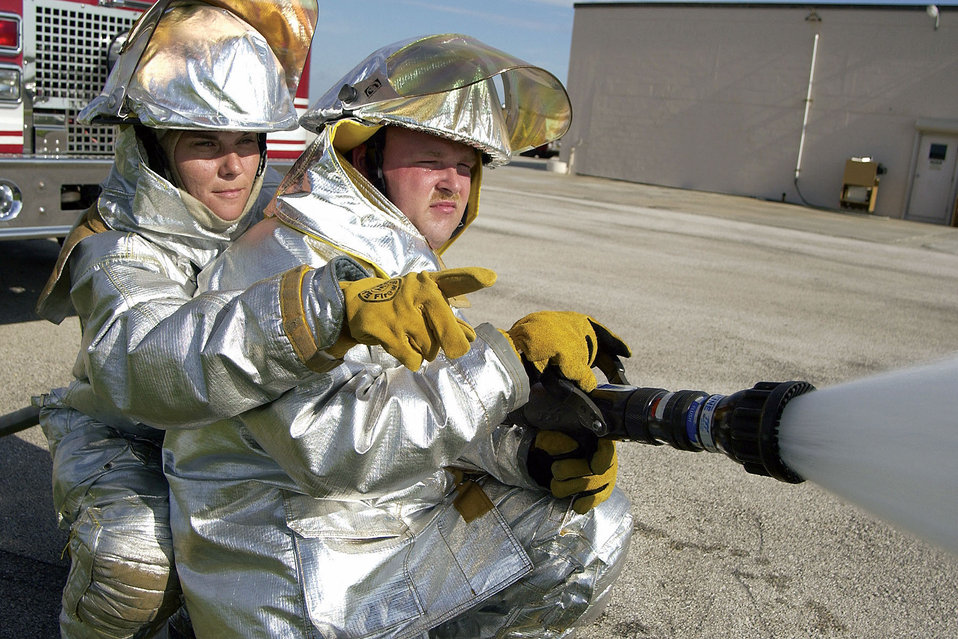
Over the shoulder fire training

PATRICK AIR FORCE BASE, Fla. -- Staff Sgt. Suzanne Blundell (left), a 45th Civil Engineer Squadron firefighter, directs Senior Airman Jamey Eaton during fire hose training. Blundell is the only female firefighter at the base fire station.